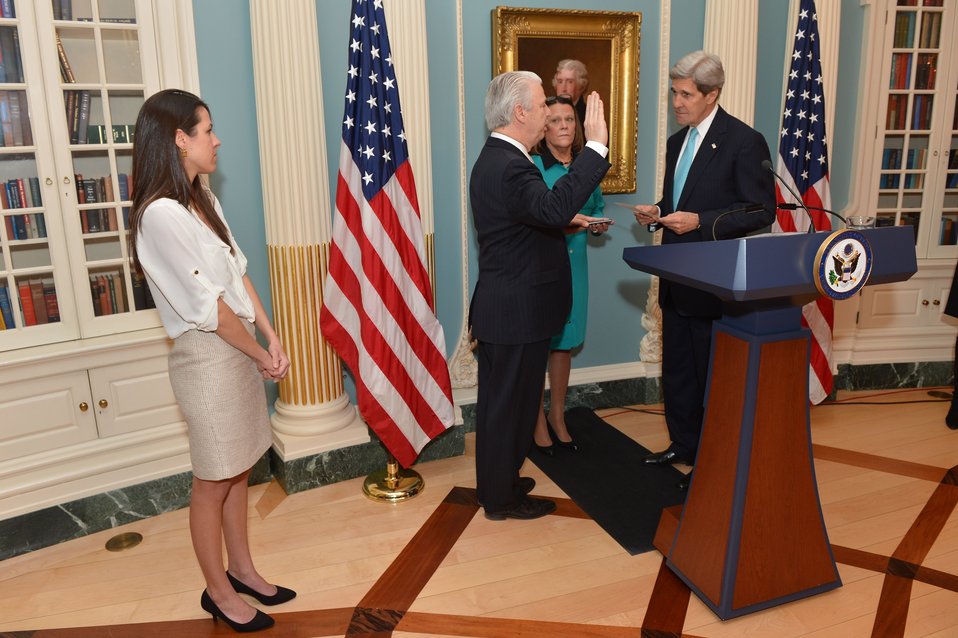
Secretary Kerry Swears in Greg Starr as Assistant Secretary for Diplomatic Security

U.S. Secretary of State John Kerry hosts a swearing-in ceremony for Assistant Secretary for Diplomatic Security Greg Starr at the U.S. Department of State in Washington, D.C., on January 8, 2014.